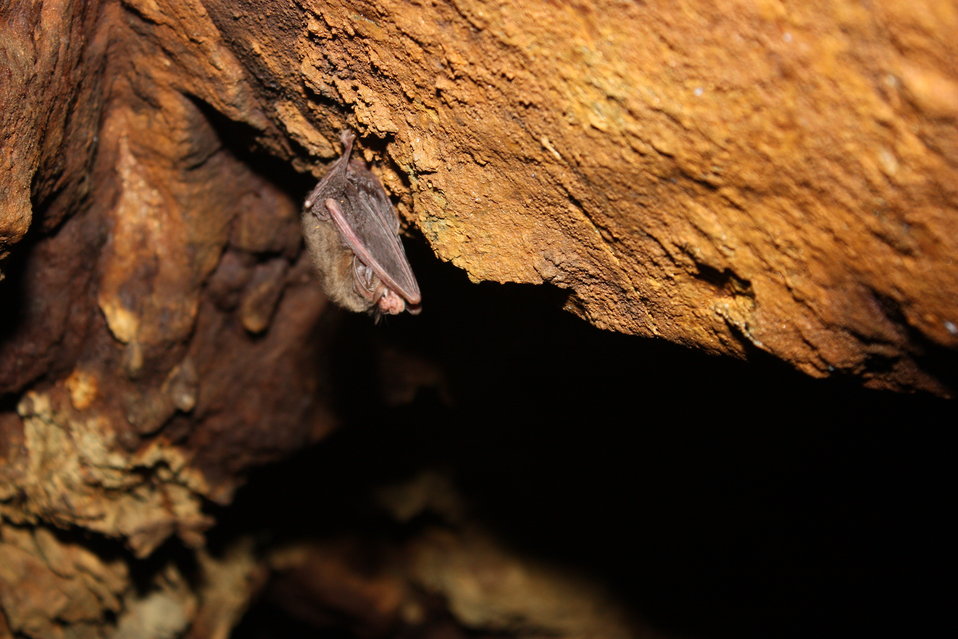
Rafinesque's big-eared bat